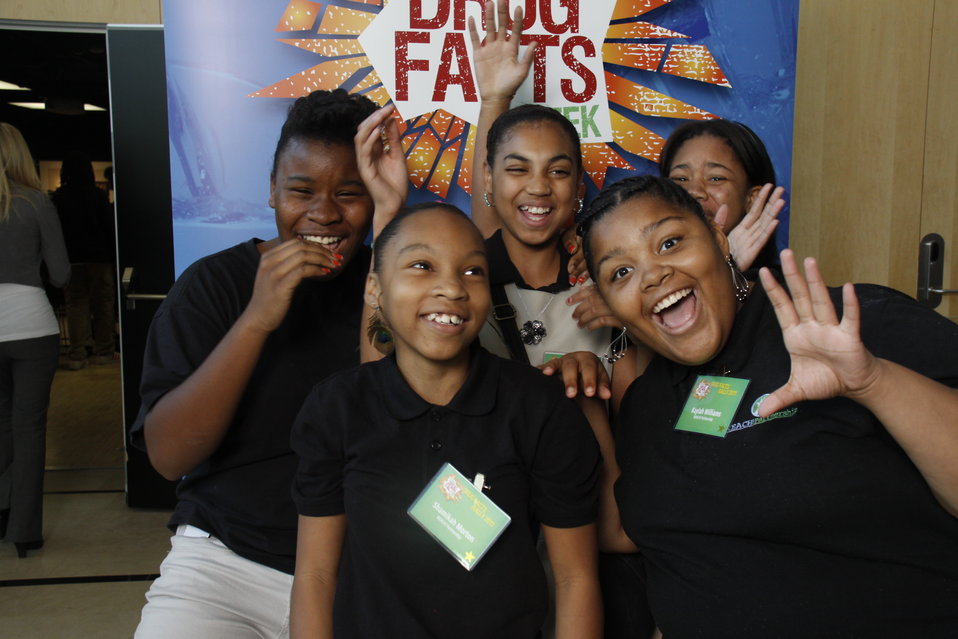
NDFW Mentor Event